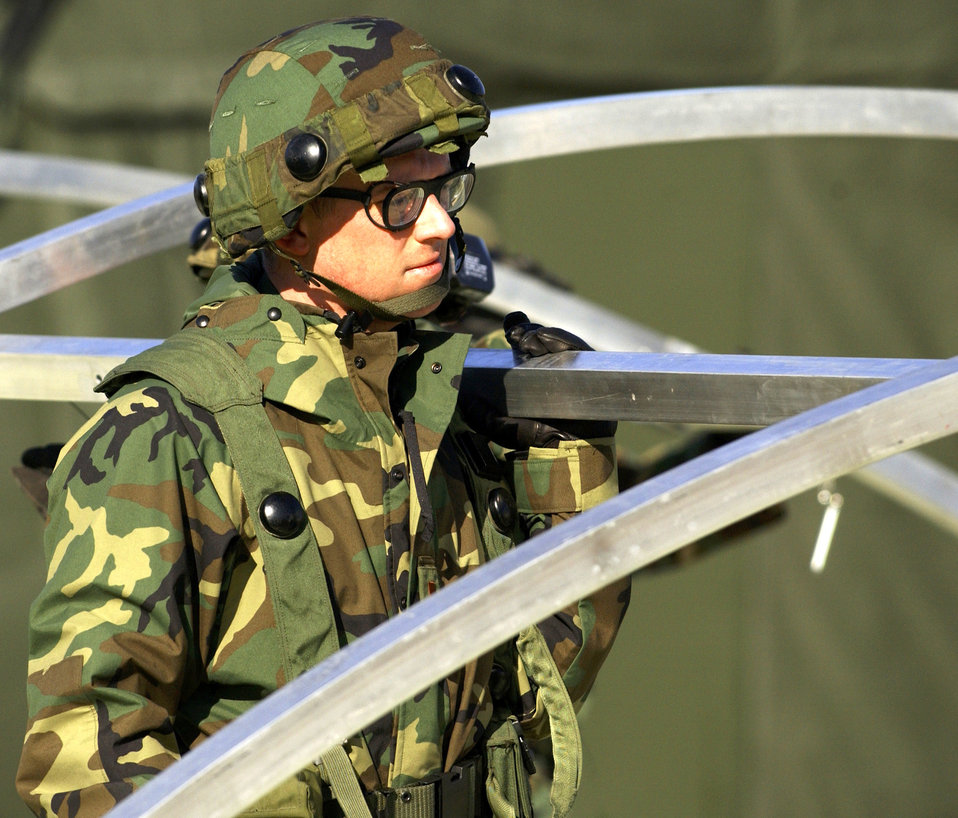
We built this city

LAKEHURST NAVAL AIR STATION, N.J. -- Servicemembers continue to construct tent city during Eagle Flag here Feb. 22. Eagle Flag is a 12-day field training exercise involving more than 400 participants aligned with air expeditionary force rotations to provide training for combat support forces. The training provides instruction on opening the air base, maintaining command and control structure and the generation of mission capable forces. The exercise will integrate Air Force expeditionary specialties into one military operation striving toward a single mission.